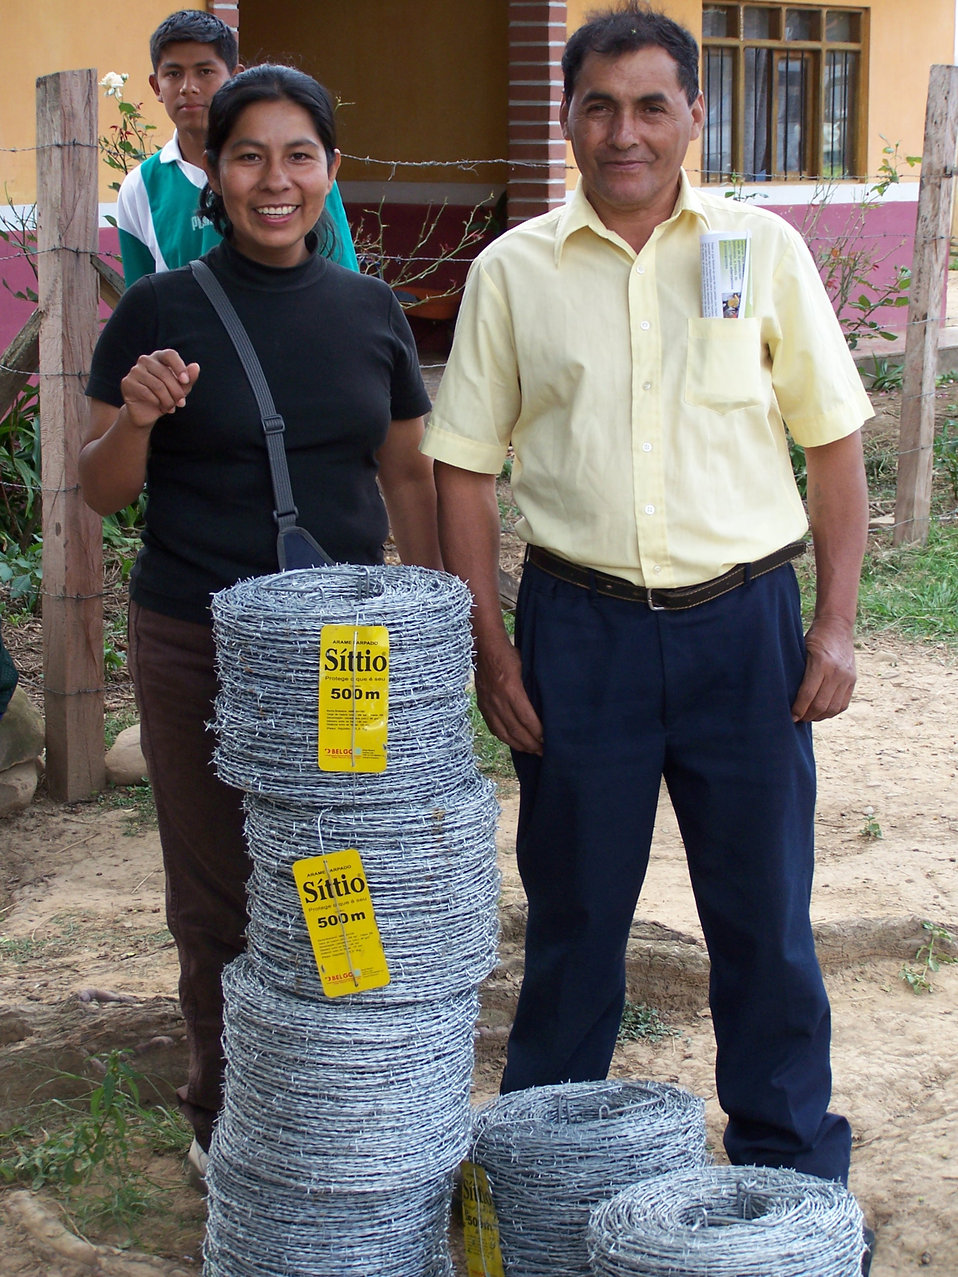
Provided as compensation for conservation actions in Bolivian forest that protect a watershed, a family receives barbed wire that will help exclude livestock from sensitive habitat. Supported by the Neotropical Migratory Bird Conservation Act.